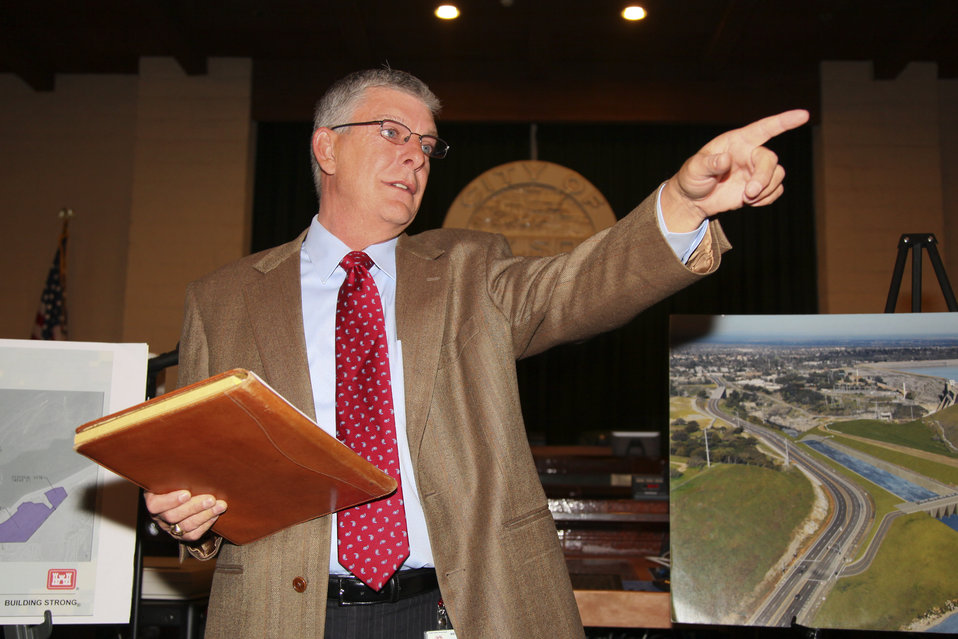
Industry Day for Phase IV of the Folsom Joint Federal Project

David Thomas (center), with the U.S. Army Corps of Engineers Sacramento District and director of the Folsom Dam Joint Federal Project, addresses the crowd during an Industry Day event June 7, 2012, at Folsom City Hall in Folsom, Calif. The Sacramento District hosted a pre-solicitation Industry Day for specialized underwater construction for the project’s auxiliary spillway, providing prospective contractors with information about the generalized scope and site conditions for the proposed Phase IV underwater construction. The Folsom Dam Joint Federal Project is a joint effort of the Corps, U. S. Bureau of Reclamation, the Central Valley Flood Protection Board and the Sacramento Area Flood Control Agency to improve the safety of the current dam and reduce flood risk for the greater Sacramento area.